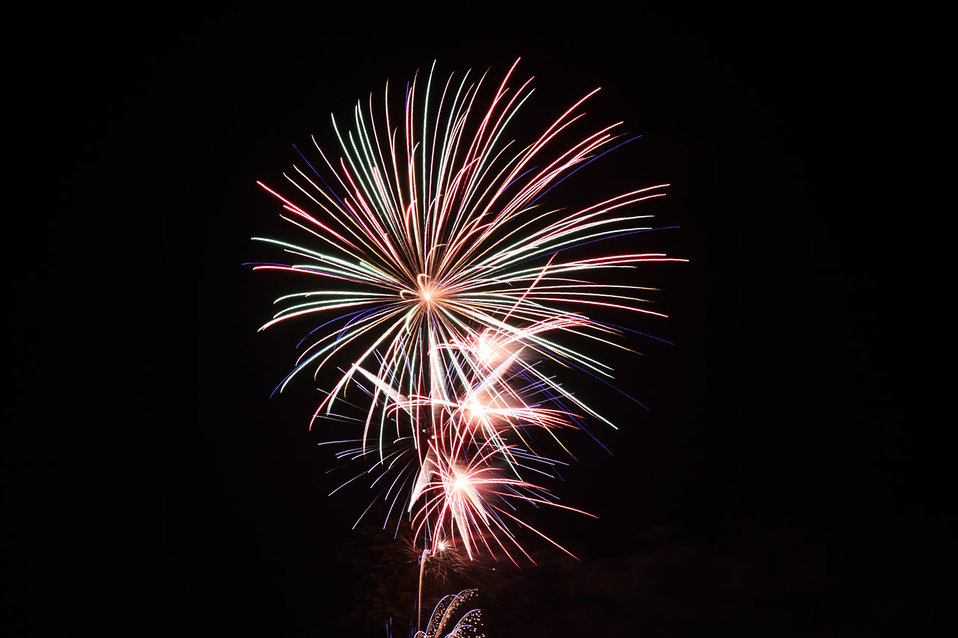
Fireworks on bonfire night.